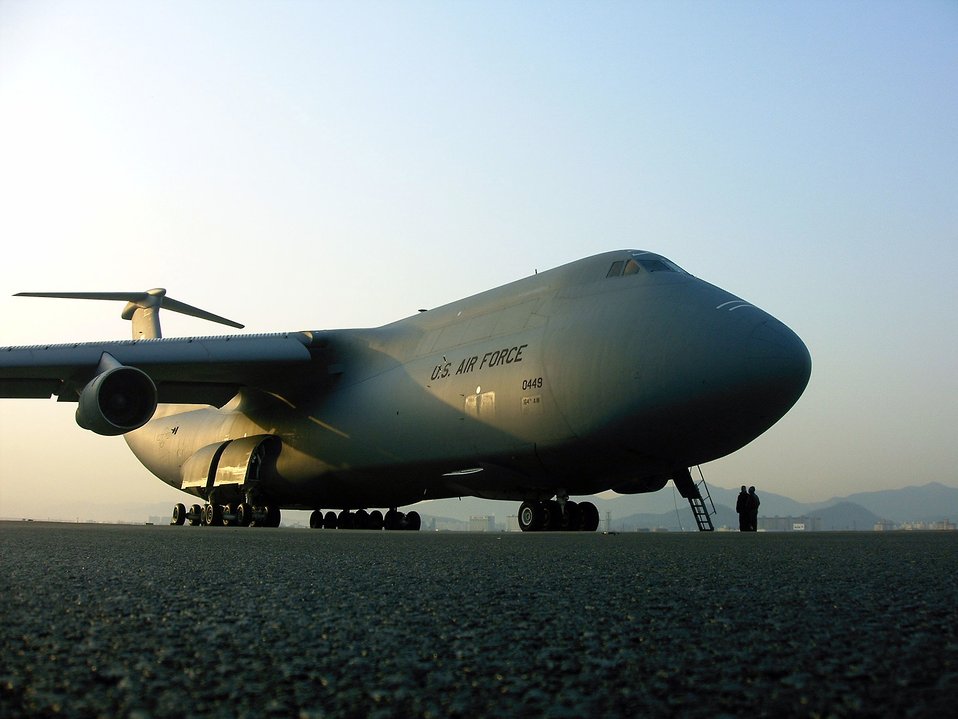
C-5 crash doesn't diminish historian's view of aircraft

A Tennessee Air National Guard C-5 Galaxy sits on the flightline at Taegu Air Base, South Korea, on Saturday, March 25, 2006. The Galaxy has been carrying troops and cargo for more than 30 years. A C-5 crashed at Dover Air Force Base, Del., on April 3 -- only the sixth crash in the aircraft's history.